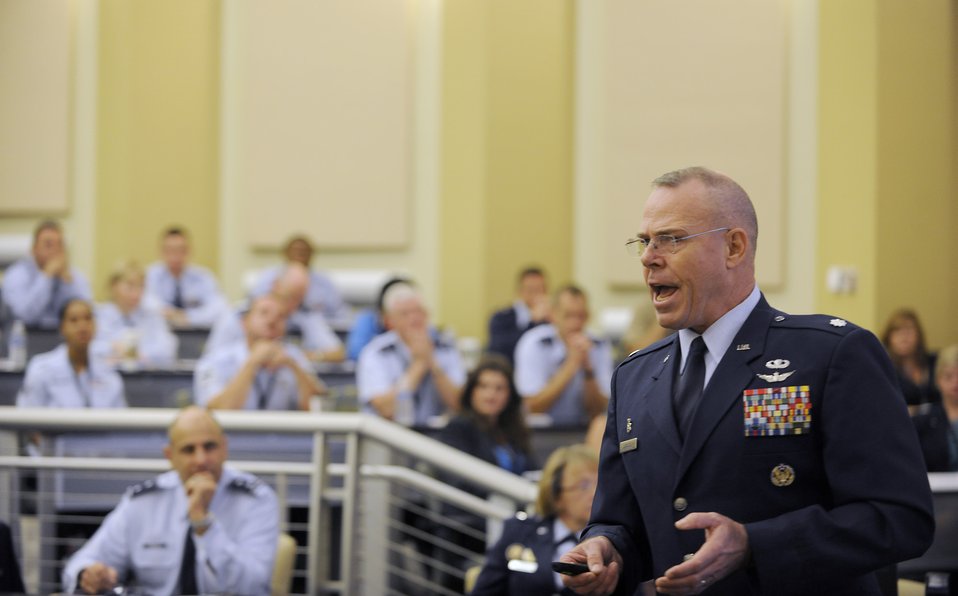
Caring for People

Lt. Col. Gregory Laffitte, from Air Force the Manpower, Personnel and Services directorate, provides Airmen fitness highlights at the Caring for People Forum at Joint Base Andrews, Md., on Sept. 26, 2012. This is the fourth annual forum which provides strategies for commanders, leaders and care professionals to help Airmen and their families.